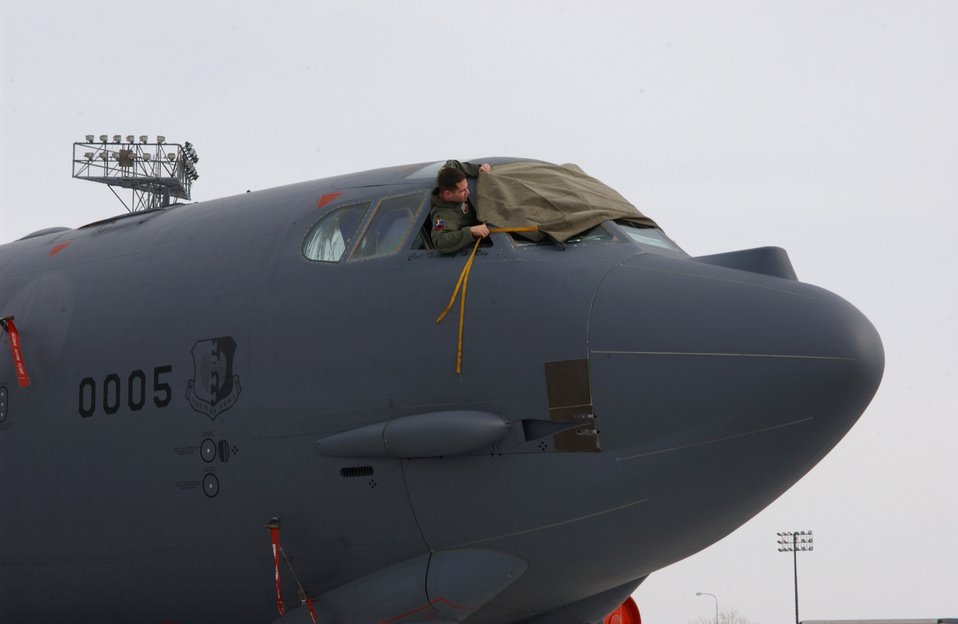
B-52 generation

An Airman from the 23rd Bomb Squadron removes a window cover on a B-52H Stratofortress during an alert generation exercise at Minot Air Force, Base, N.D., Tuesday, Feb. 28, 2006. The exercise tested cruise missile loading and aircrew response procedures.